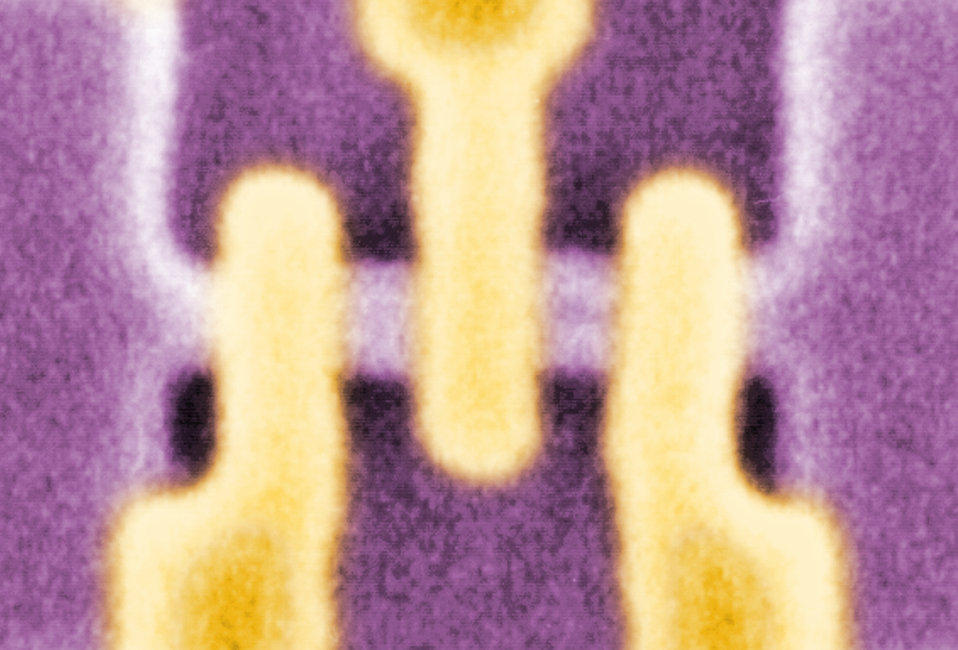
New Design for Transistors Powered by Single Electrons

Colorized micrograph of three tunable gates across an electrical channel in a single electron tunneling (SET) transistor.